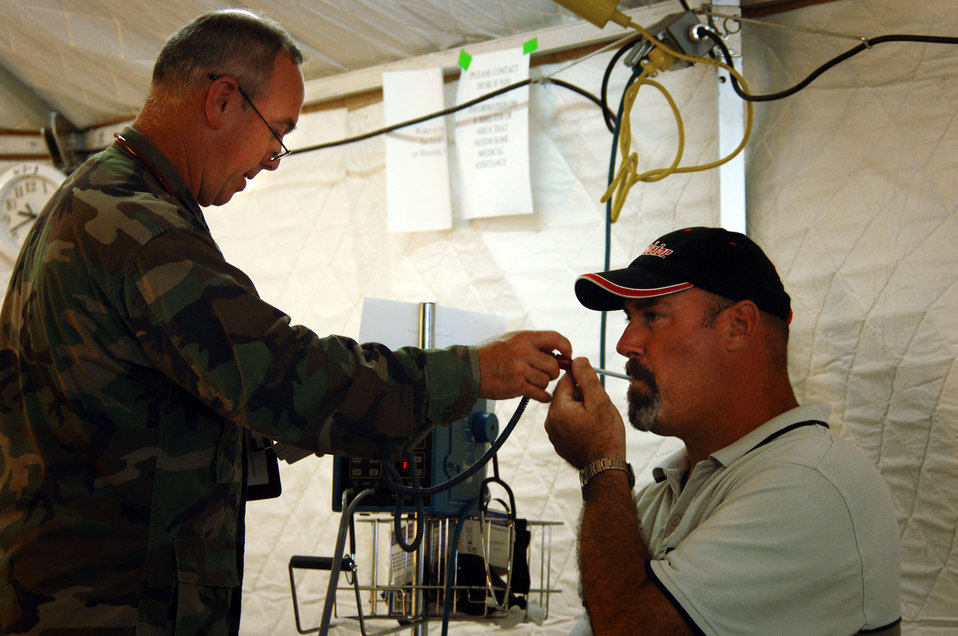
Keesler helping restore Gulf Coast medical infrastructure

GULFPORT, Miss. -- Capt. Frank Dolifka takes Kirk Moran's temperature before admitting him for treatment at a facility set up outside the Garden Park Medical Center hospital here. The captain, along with other medical providers with the 81st Medical Group from nearby Keesler Air Force Base, is working with the Federal Emergency Management Agency to provide medical care to victims of Hurricane Katrina.